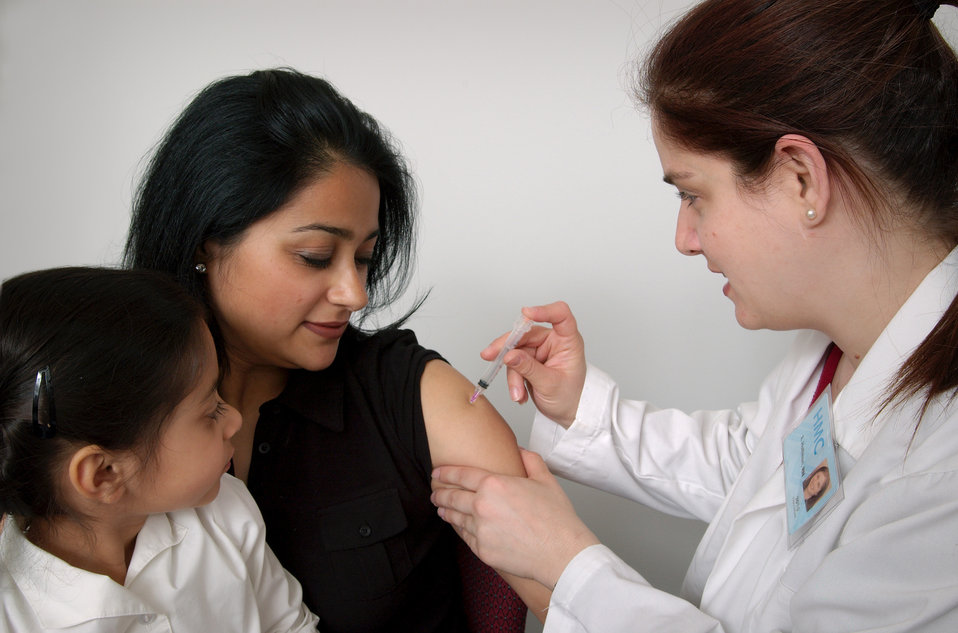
While holding her young daughter, the woman depicted in this 2006 image, was receiving an intramuscular vaccination, which was being administered by a qualified nurse. The nurse had chosen the woman's left shoulder muscle as the injection site, and was stabilizing the area using her free hand.